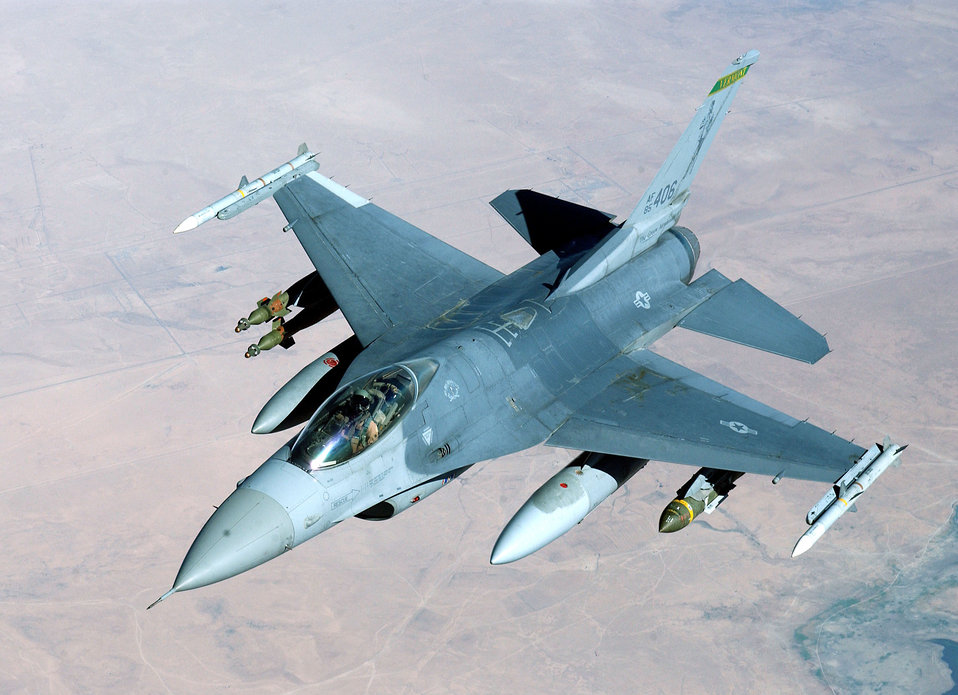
Fighting Falcon

OVER SOUTHWEST ASIA -- An F-16 Fighting Falcon assigned to 332nd Air Expeditionary Wing at Balad Air Base, Iraq, maneuvers to the post-contact position after an aerial refueling mission here Aug. 16.